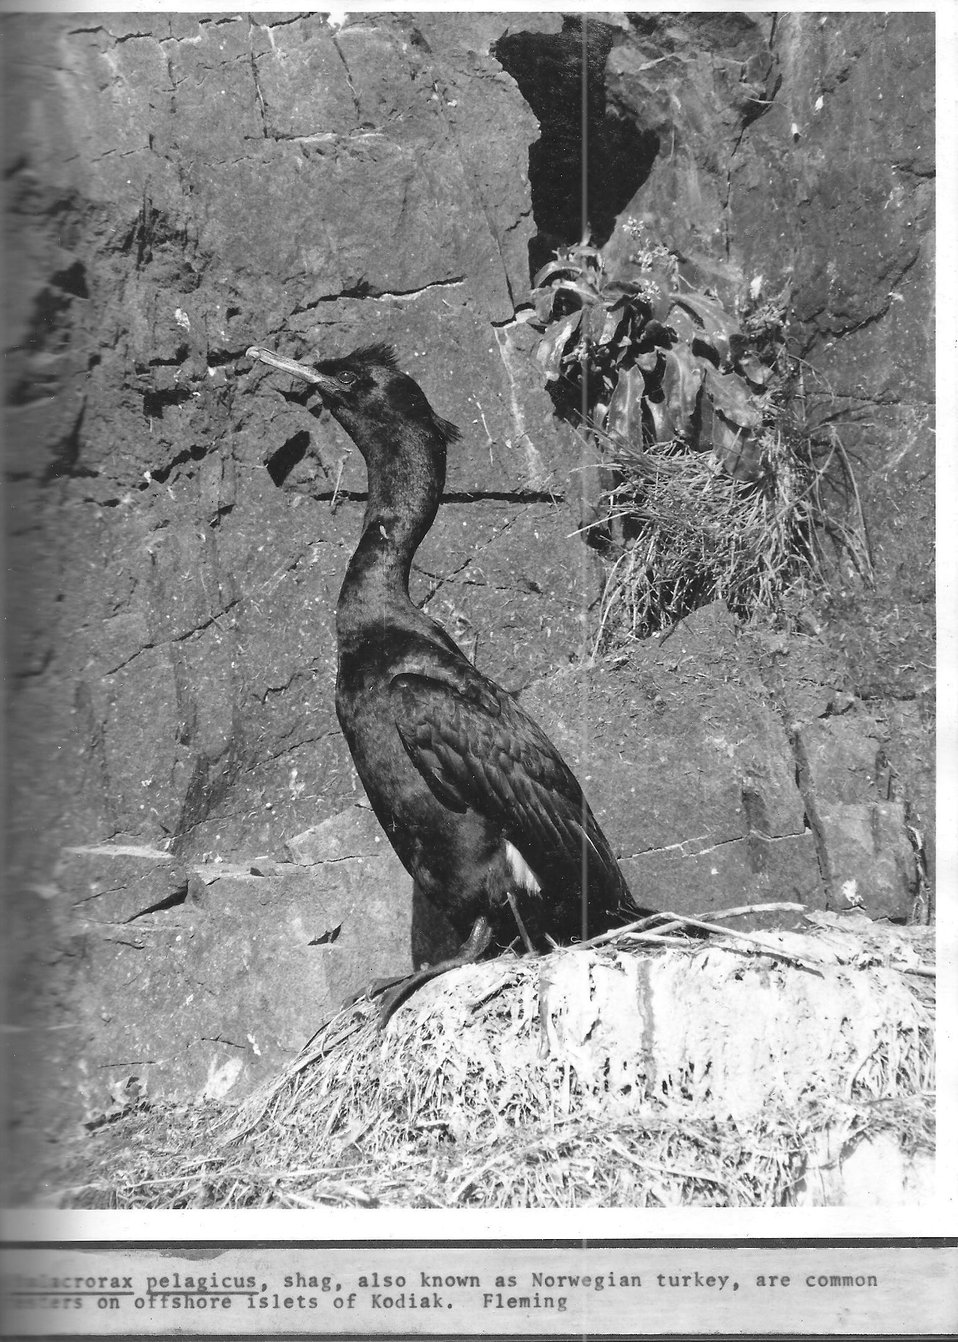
(1970) Norwegian Turkey

Credit: USFWS

Source and Contact: Kodiak National Wildlife Refuge